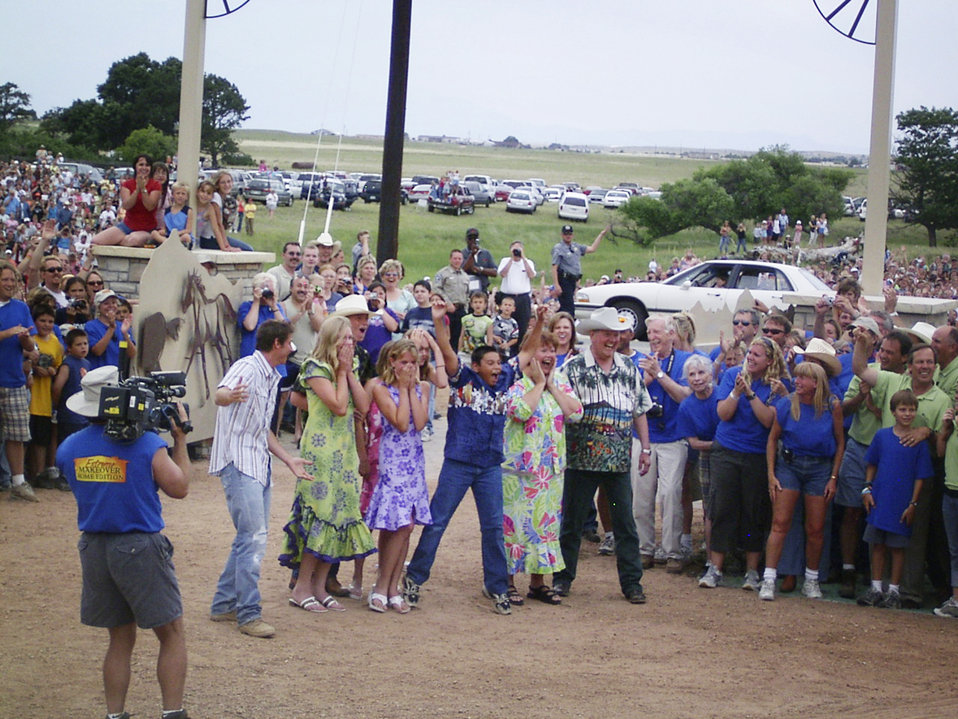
Home Makeover

PEYTON, Colo. --